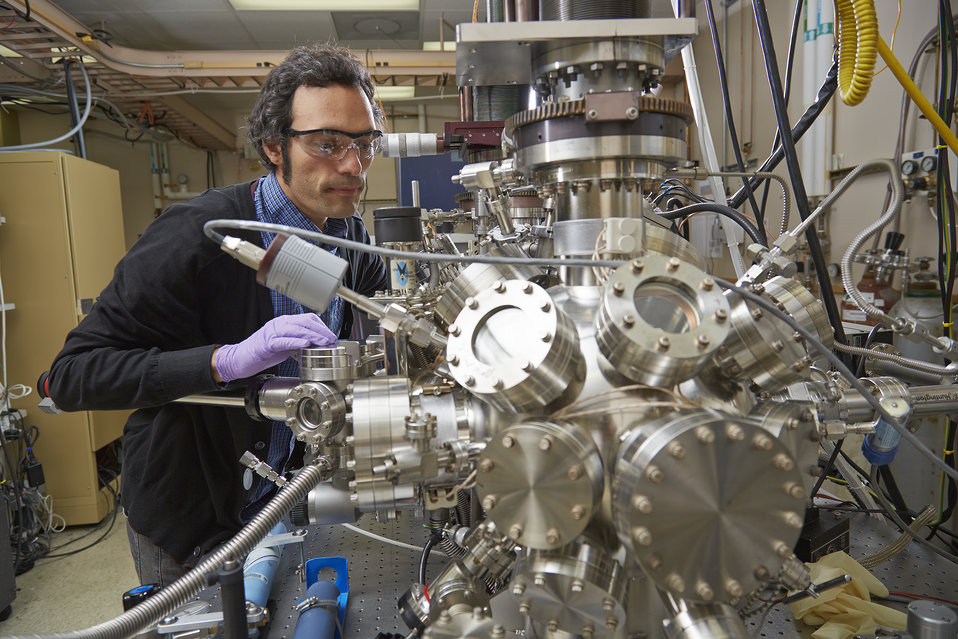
Sandia National Laboratory physicist aligns a lithium-phosphate battery electrode sample for chemical characterization with x-ray photoelectron spectroscopy.